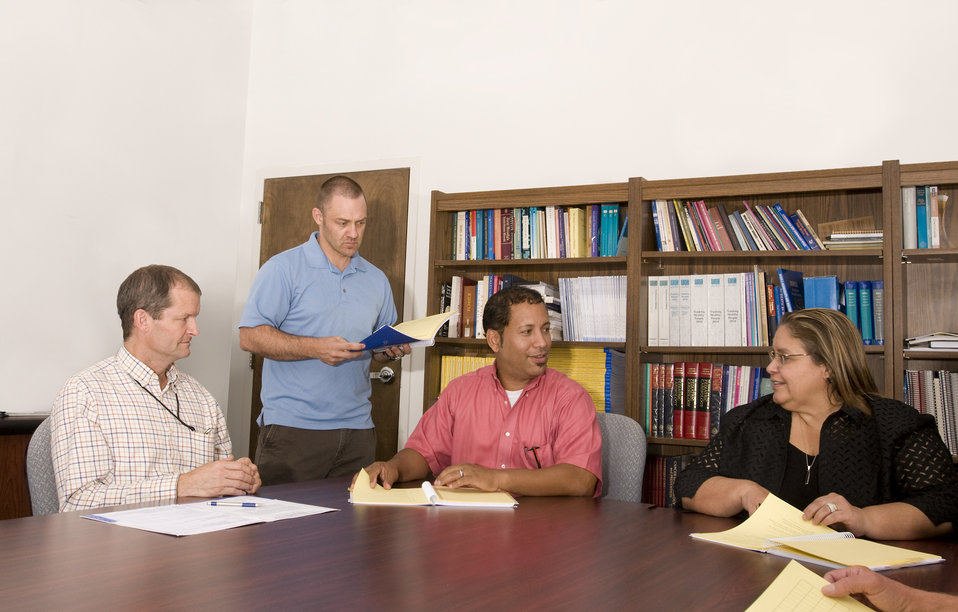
This image depicts a group of healthcare workers seated at a table discussing a strategy they would be implementing, which would guide them through an instructional campaign centered on the education of the diabetic patient to the healthy lifestyle one must implement in order to maintain control over the detrimental effects of this disease. One of the attendees had stood up, and was discussing some literature that had been brought to the meeting.